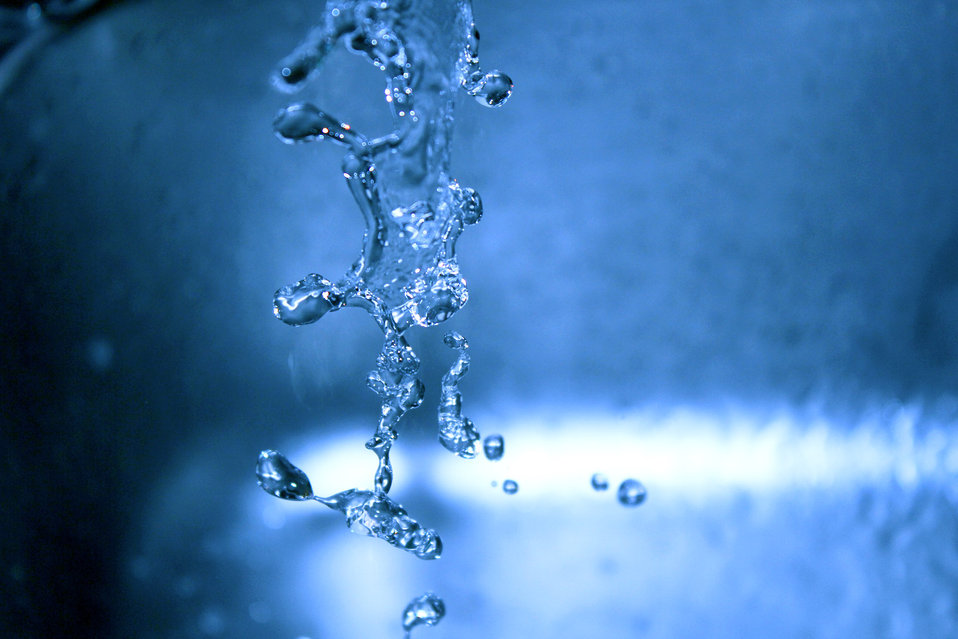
Water background 5

Water background.